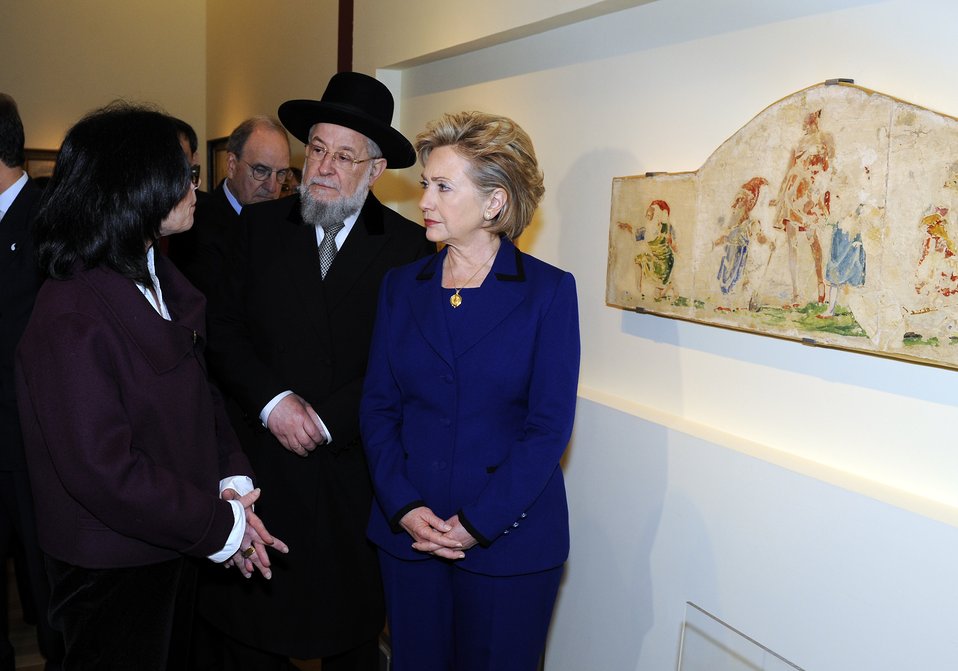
Secretary Clinton Visits Holocaust Art Museum

U.S. Secretary of State Hillary Clinton visited the new Bruno Schulz display, Wall Painting under Coercion, in the Holocaust Art Museum, guided by Director of the Museums Division Yehudit Inbar and Senior Art Curator Yehudit Shendar and accompanied by Chief Rabbi Lau, Yad Vashem Council Chairman, and Middle East Special Envoy Senator George Mitchell in Jerusalem March 3, 2009